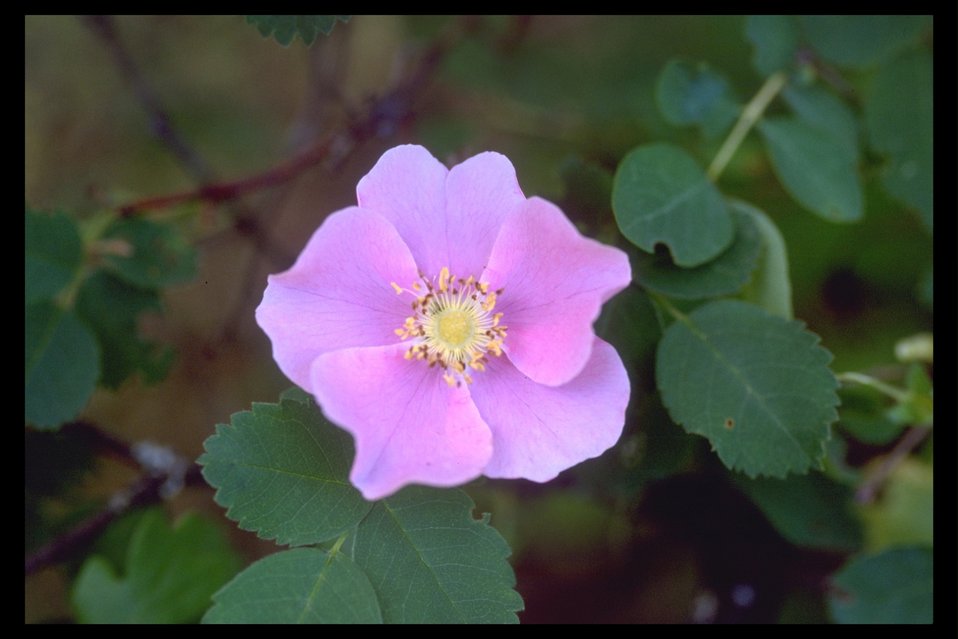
Wood Rose, also called Wild Rose, (Rosa nutkana var nutkana) found at the Lower Table Rock summit.